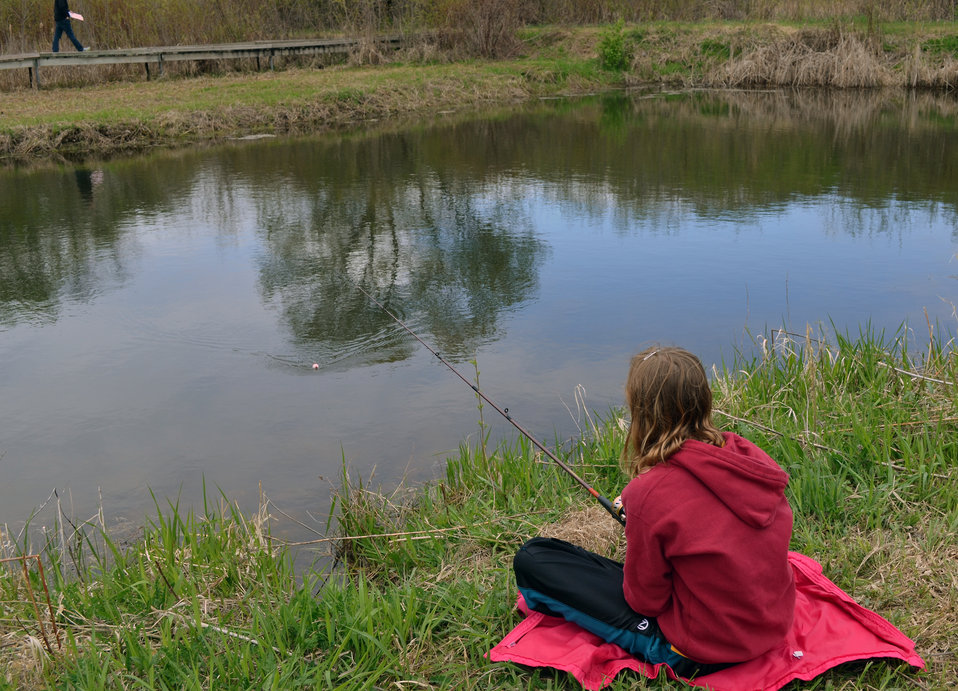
Fishing